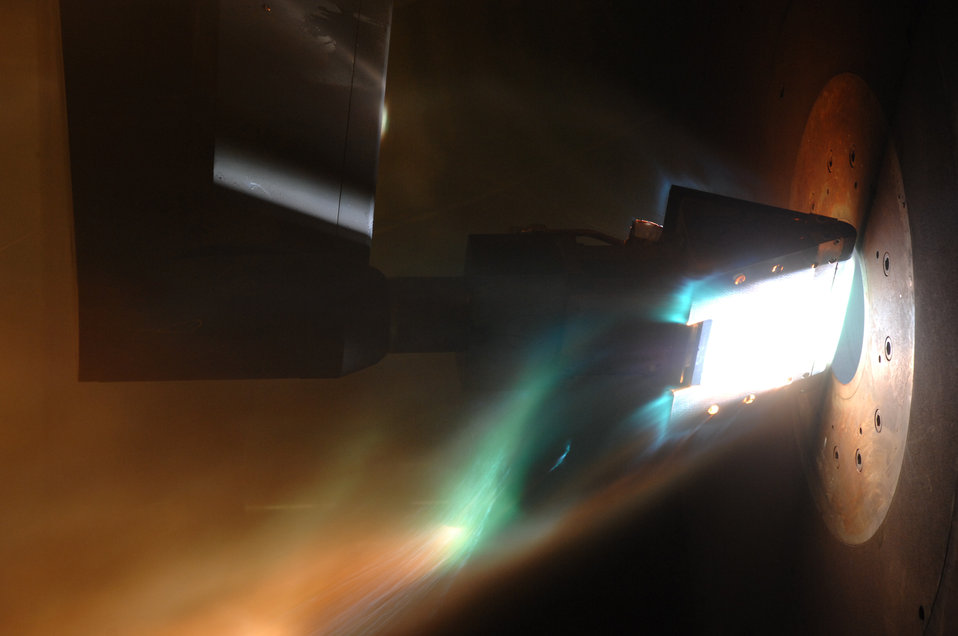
Mars Rover

An Orion Crew Exploration Vehicle heat shield material sample model undergoes preproduction aerothermal testing in Arnold Engineering Development Center's H2 test facility as part of a facility validation and calibration run. More testing is slated to occur in December.